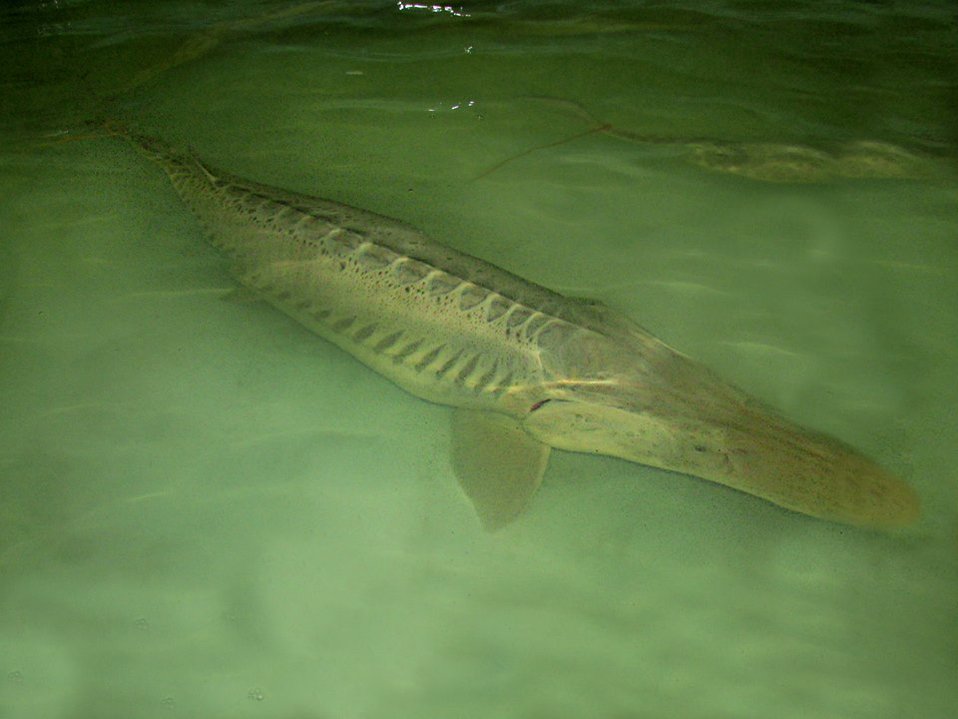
Sturgeon Moon

Happy Sturgeon Moon!

August's full moon is known as the Sturgeon Moon because Native American tribes considered this to be prime time for sturgeon fishing. This full moon consistently appears to have a red haze and at sundown is one of the best times to see it.